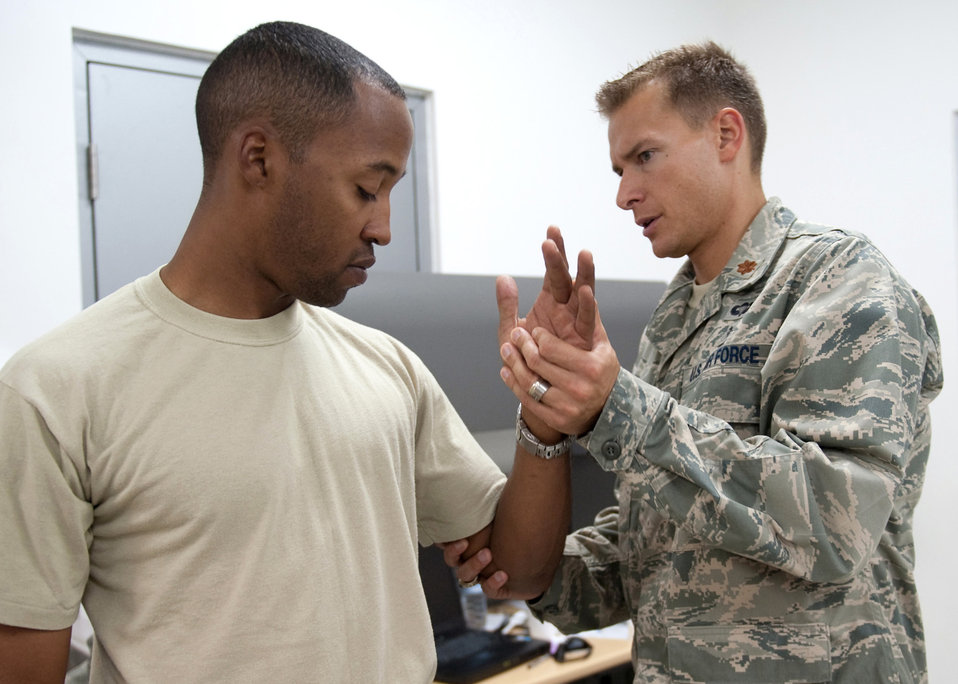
Physical therapists keep servicemembers in the fight

Maj. (Dr.) Christian Lyons examines Army Sgt. Mark Collins July 28 at an air base in Southwest Asia. Physical therapists help all servicemembers and coalition partners deployed to the U.S. Central Command area of responsibility who are in need of rehabilitative care. Doctor Lyons, a 379th Expeditionary Medical Group operations flight physical therapist, is deployed from Royal Air Force Lakenheath, England. He is a native of Volant, Pa. Sergeant Collins, assigned to the 354th Medical Logistics Company, hails from Schertz, Texas.